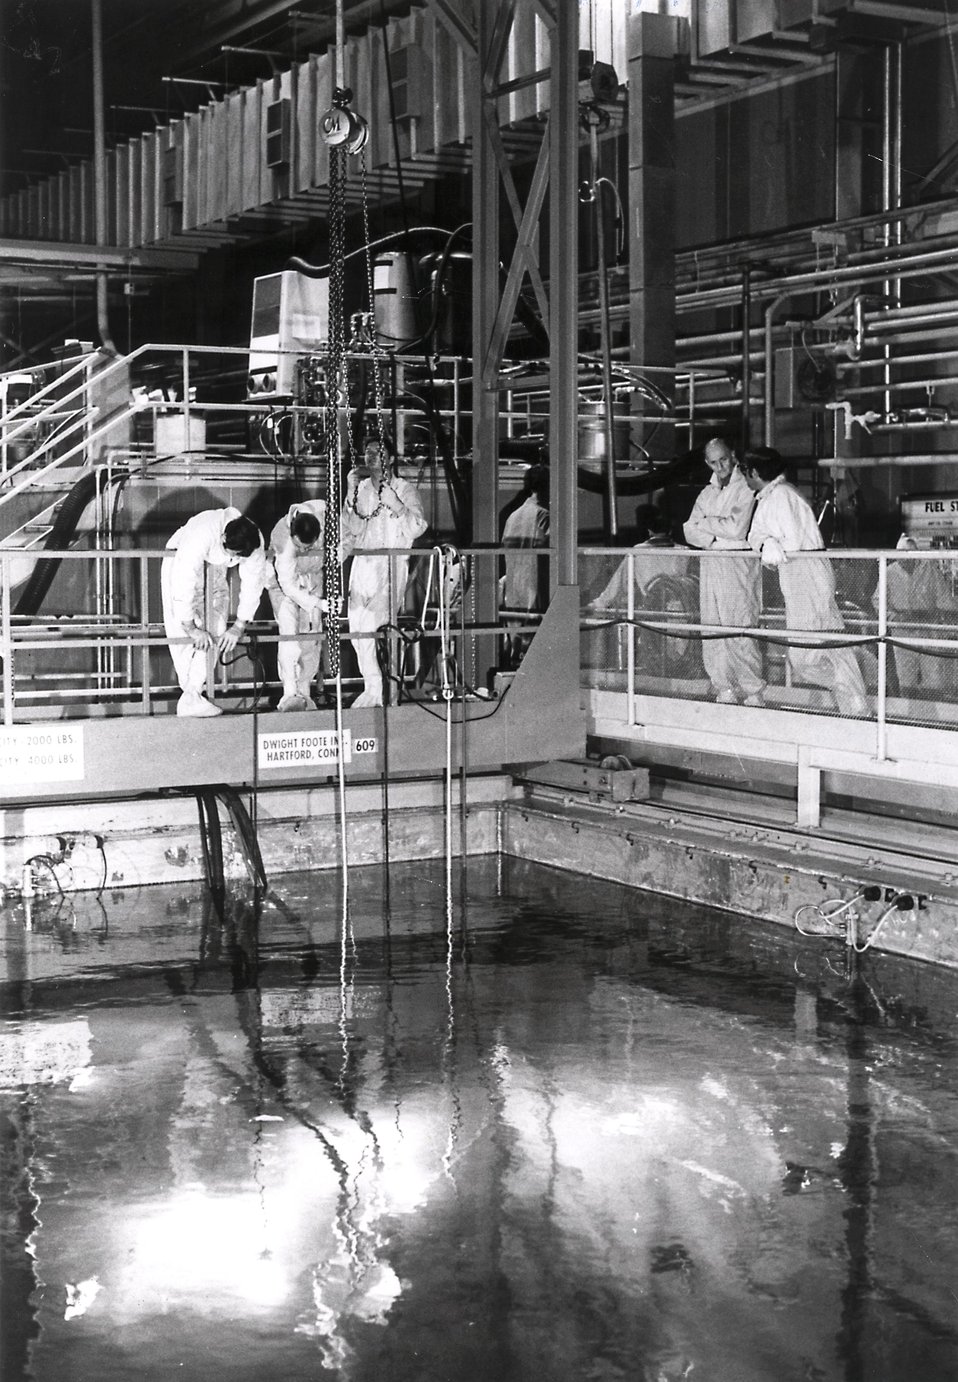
Fuel handling operation at the Robert Emmett Ginna Nuclear Power Plant on the south shore of Lake Ontario. The 420,000-kilowatt plant, owned by the Rochester Gas and Electric Company, began operation in 1969. Circa 1974.